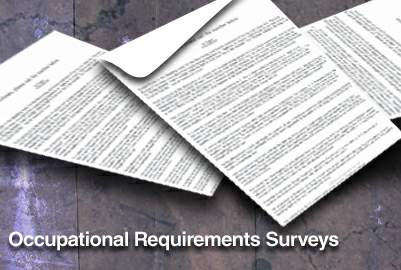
Force Management seeks officer requirements survey participants

Air Staff Force Management Policy Division officials are seeking officer volunteers, in addition to those who have received e-mail invitations, to complete two Air Force Officer Occupational Requirements surveys.The results of two Air Force-wide officer surveys will be used to revise the Air Force Officer Qualifying Test, which is now administered to all accession sources.